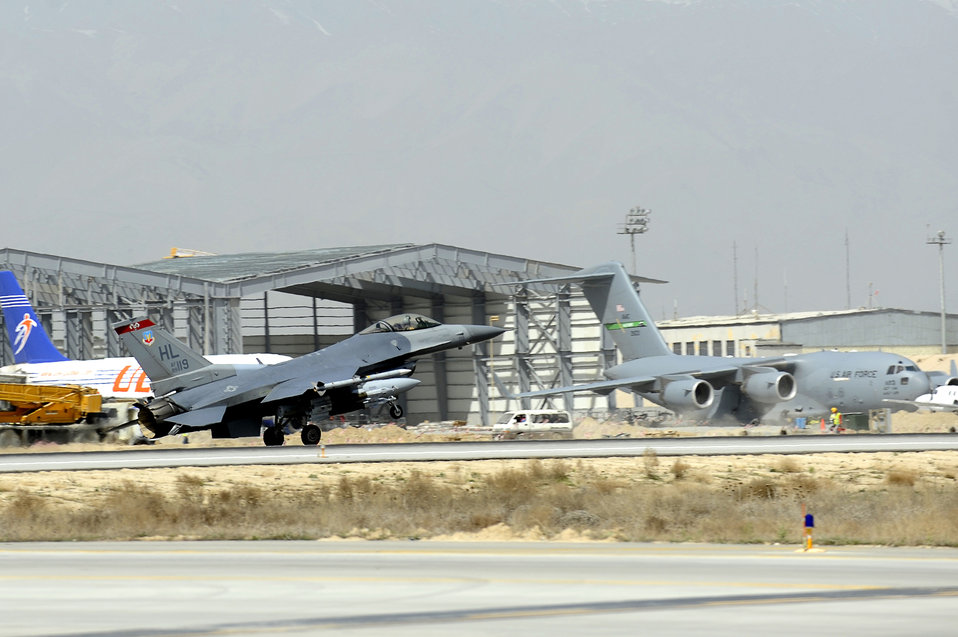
30 Code 1 flights

This F-16 Fighting Falcon, landing at Bagram Airfield, Afghanistan, March 23, 2010, just completed its 30th code 1 flight, meaning no maintenance write-ups for 30 flights in a row.